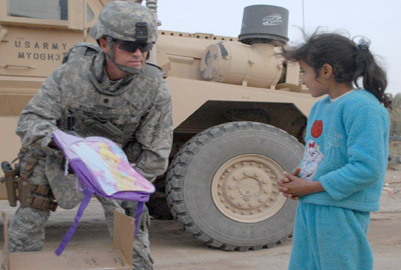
Service members give gifts to children

Lt. Col. Tom Walsh hands a backpack to an Iraqi girl Dec. 16, 2010, at Ur Elementary School near Tallil Air Base, Iraq. Colonel Walsh is an Echelon Above Division-Advise and Train senior adviser.